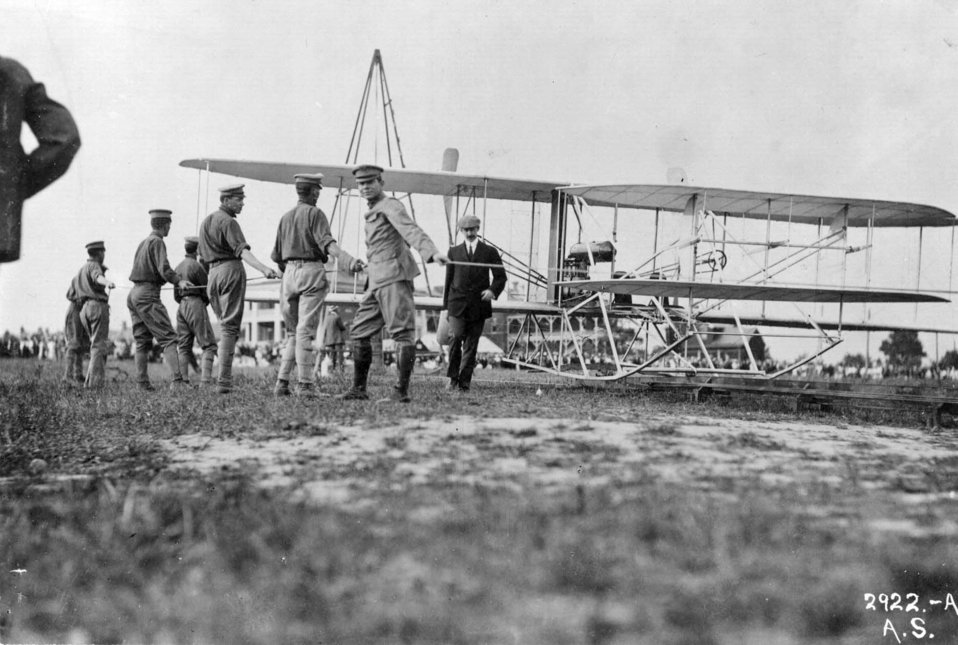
Orville Wright at Ft. Myer, VA

EARLY YEARS -- Orville Wright at Ft. Myer, VA -- September 9, 1908